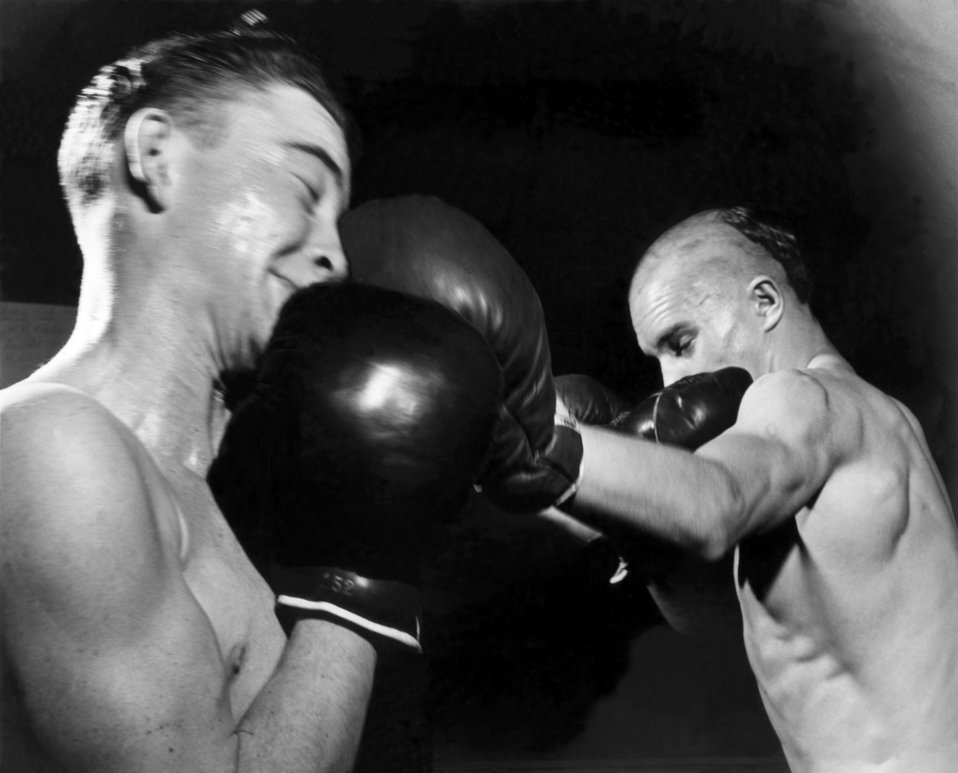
Boxing Oak Ridge

NO#6 DOE photo Ed Westcott

Boxing Oak Ridge Tennessee 1945